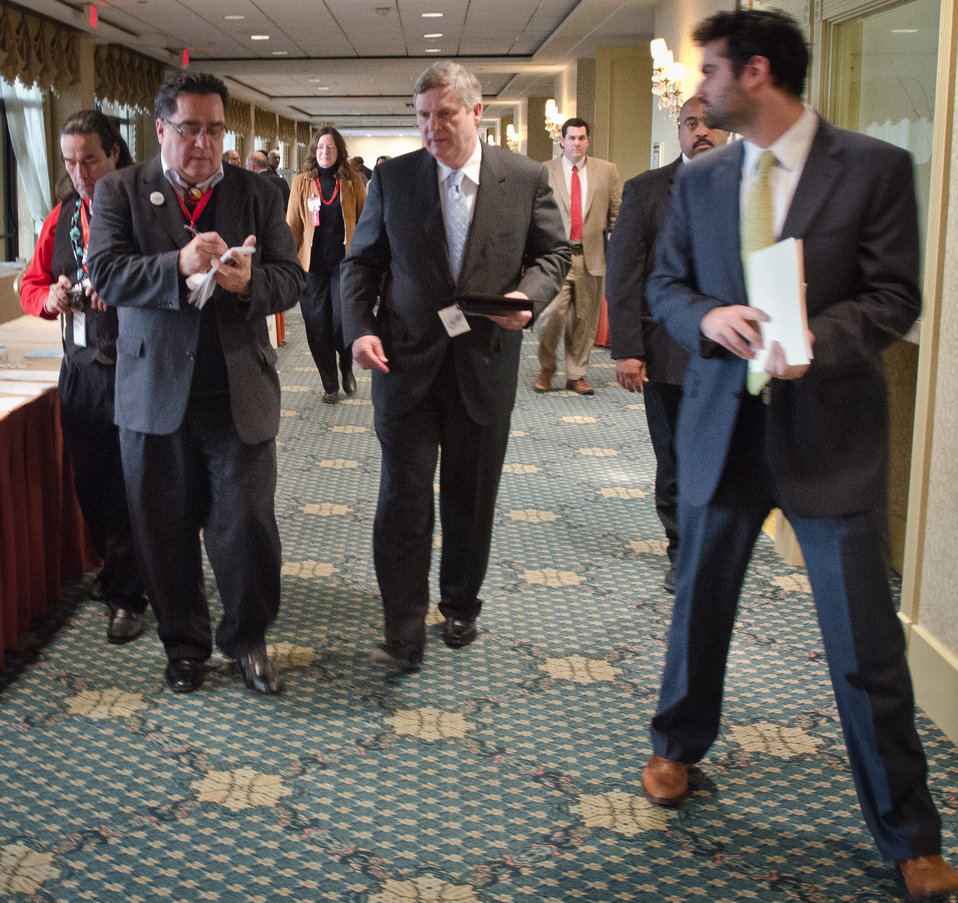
Agriculture Secretary Tom Vilsack (center) took a little time to talk with Native News Network.com Editor-In-Chief Levi Rickert (wearing glasses) Agriculture Secretary Tom Vilsack (right) took a little time to talk with Native News Network.com Editor-In-Chief Levi Rickert (left) at the National Congress of American Indians Tribal Nations Legislative Summit at L’Enfant Plaza Hotel in Washington, D.C., on Wednesday March 7, 2012. Secretary Vilsack has made improving relations with Native American Tribes a priority by creating the Office of Tribal Relations and directed all U.S. Department of Agriculture (USDA) agencies to be more aware of tribal issues and engage in tribal consultation and collaboration. Secretary Vilsack reiterated USDA’s support to Native American communities with financial support for electric, broadband and wastewater infrastructure, and providing families and businesses with home loans and business grants. Secretary Vilsack emphasized USDA’s participation in the First Lady’s Lets Move in Indian Country initiative to combat childhood obesity in tribal communities.